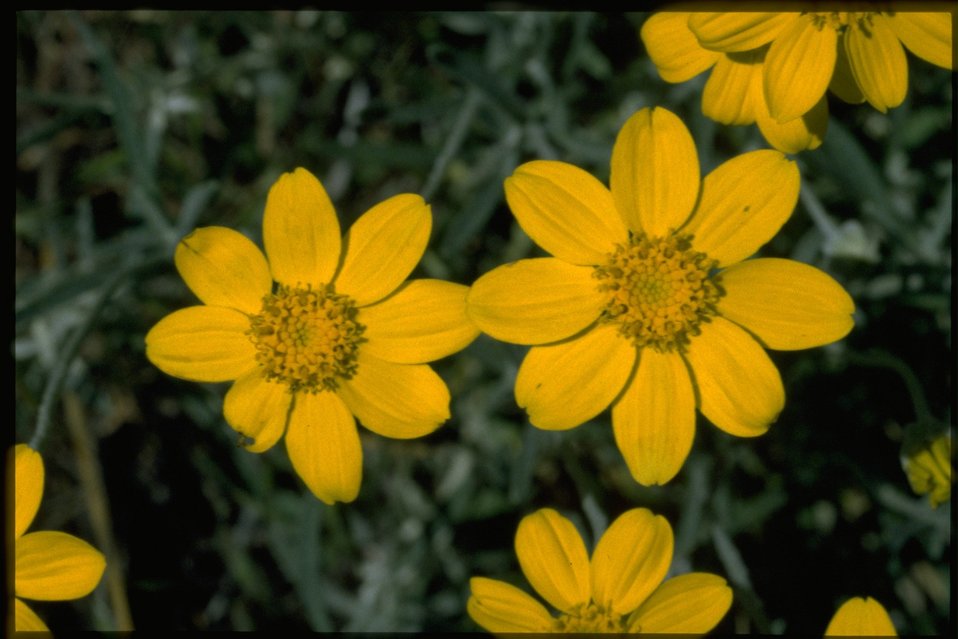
Closeup shot of Eriophyllum lanatum.